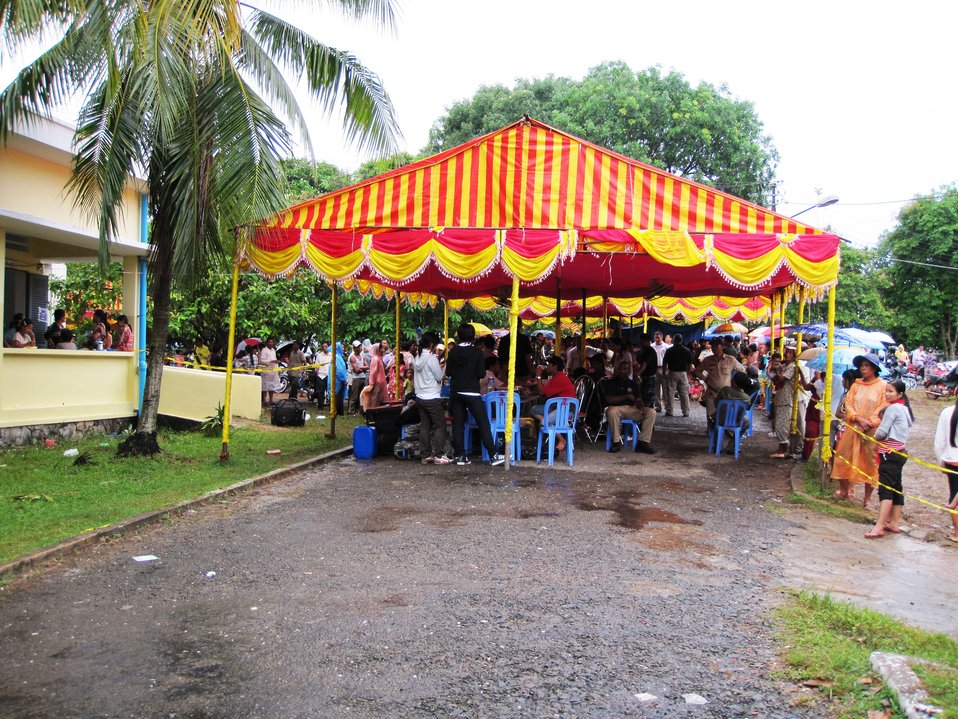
Patients Await Pacific Partnership 2010 Treatment

Patients await treatment during a Pacific Partnership 2010 medical project at Sihanouk Provincial Hospital in Sihanoukville, Cambodia, on June 22, 2010.